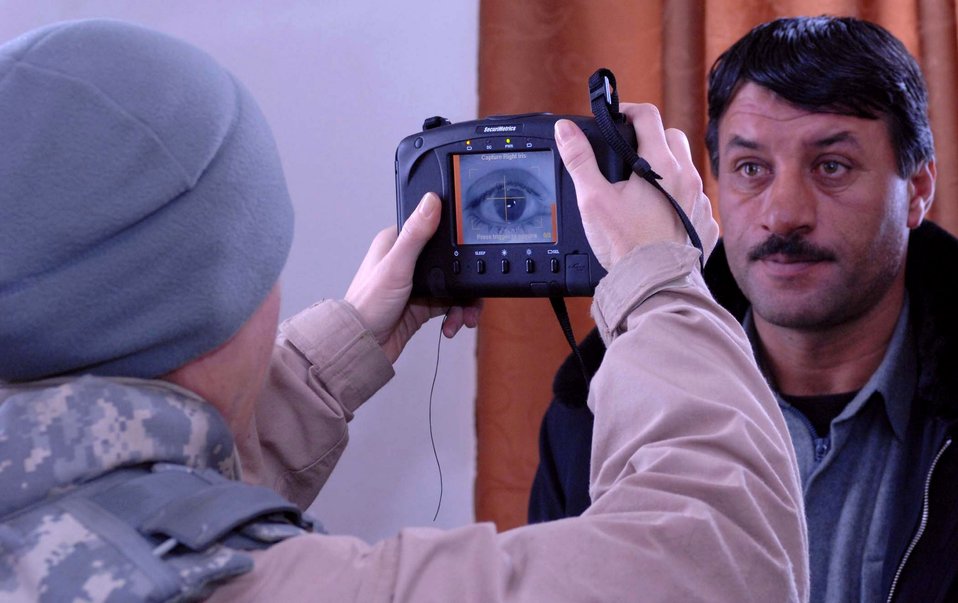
Gathering biometric data

Tech. Sgt. Buffie Verhagen takes a picture of Mouhammed Naieem's iris Jan. 14 at Bagram Air Base, Afghanistan. The photo is cataloged in a database containing biometric information used to identify Afghans the Provincial Reconstruction Teams interact with. Sergeant Verhagen is deployed from Sheppard Air Force Base, Texas, and is currently assigned to the Bagram Provincial Reconstruction Team. Mr. Naieem is the Kohistan II district chief of police.